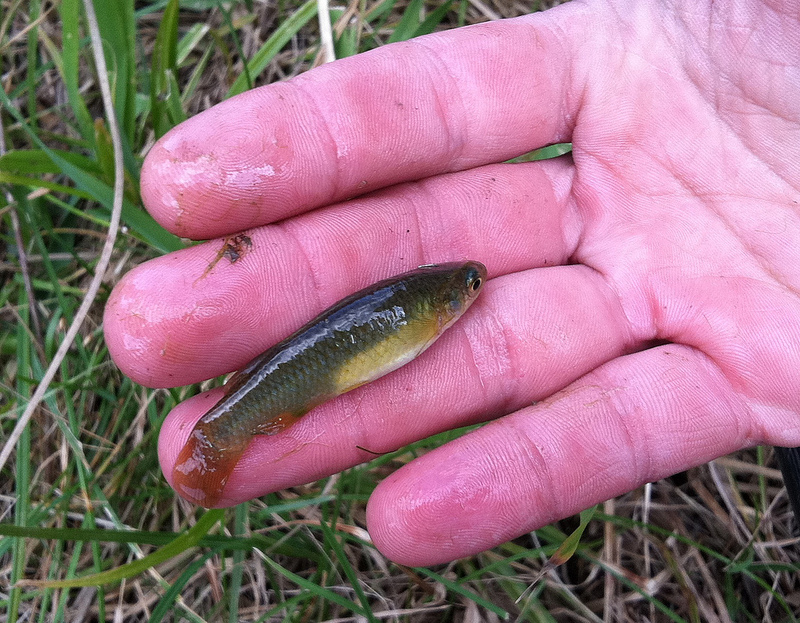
Plains Topminnow

A close up view of the plains topminnow.

Location: Dismal River near Halsey, Nebraska

Credit: Lindsay Vivian / USFWS

Photo Contest Entry #48